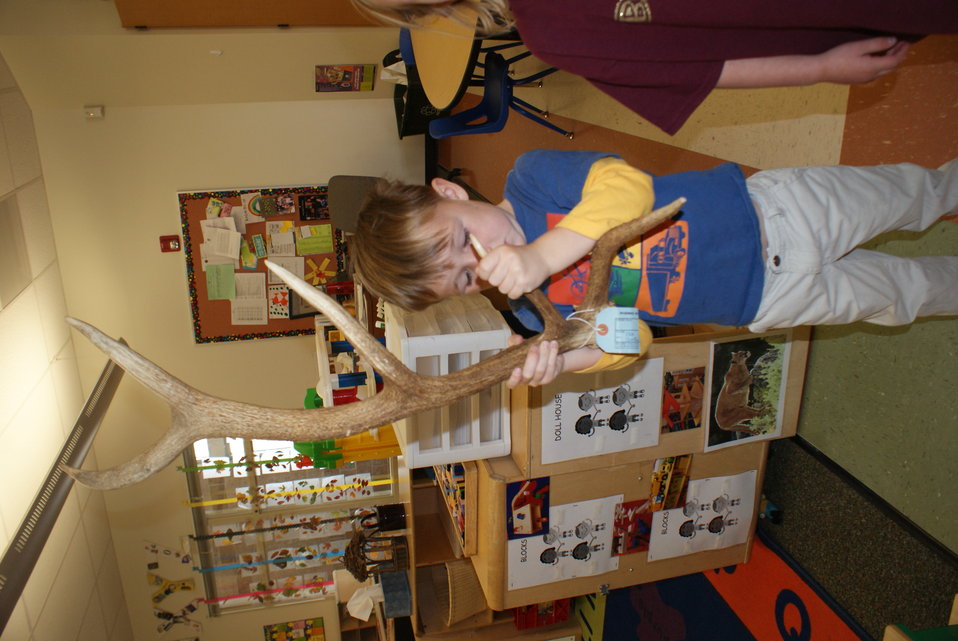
Scientists in the Community Program

U.S. Fish and Wildlife Service Mountain-Prairie Region Deputy ARD for External Affairs, Matt Kales, introduces early childhood education students at William Roberts Elementary School in Denver to some of Colorado's native and historic wildlife species.